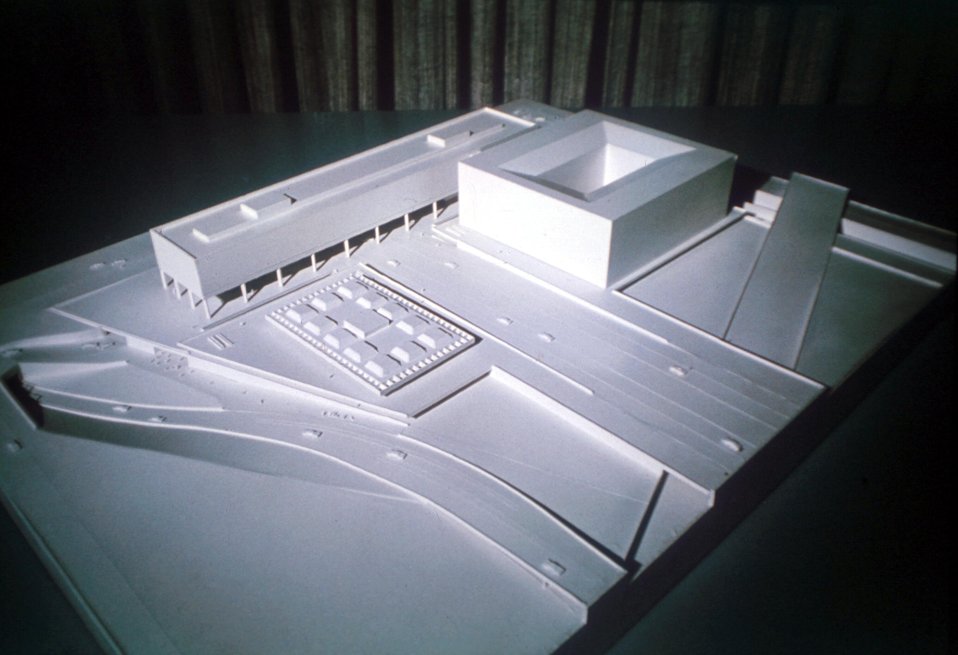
Federal Office building No. 5 Washington DC